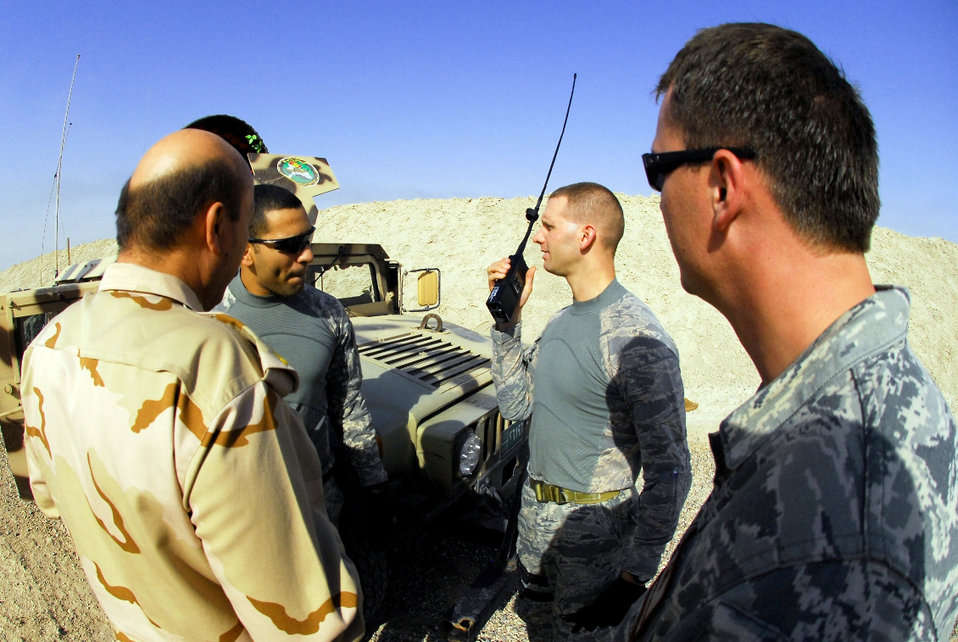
Air Force commander 'ecstatic' at Iraqi coordination

Maj. Lee Dewald ensures radio connectivity between aircraft and ground forces is possible at all times during a training exercise between Iraqi army and air force units at Camp Wessam, Iraq, Sept. 12, 2009. Major Dewald is an air liaison officer for the 84th Expeditionary Air Support Operation Squadron.